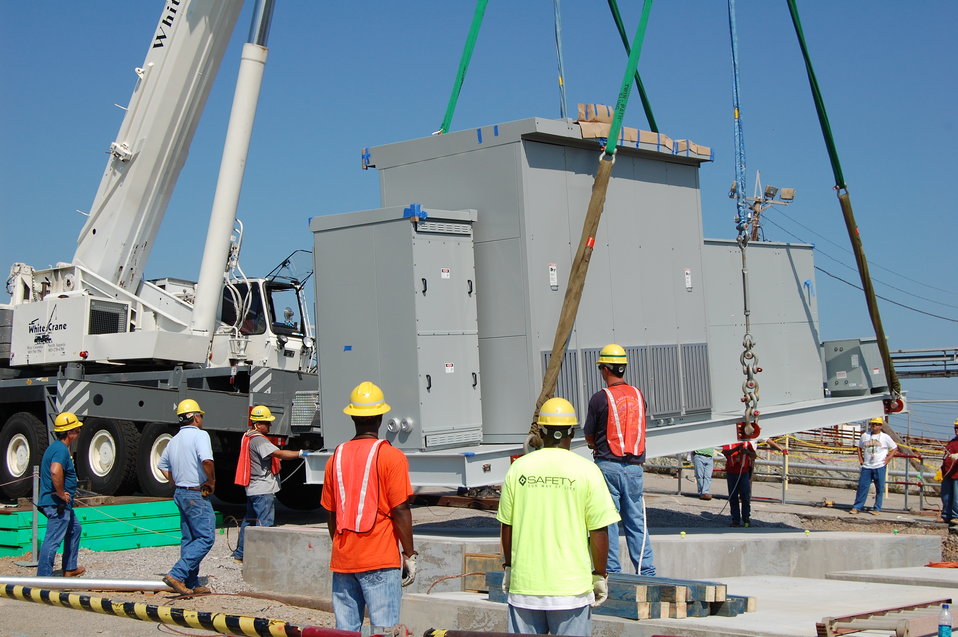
Recovery Act Workers Develop Skills for Careers in Nuclear Industry

Recovery Act workers perform work to upgrade an underground waste storage tank at the Savannah River Site.